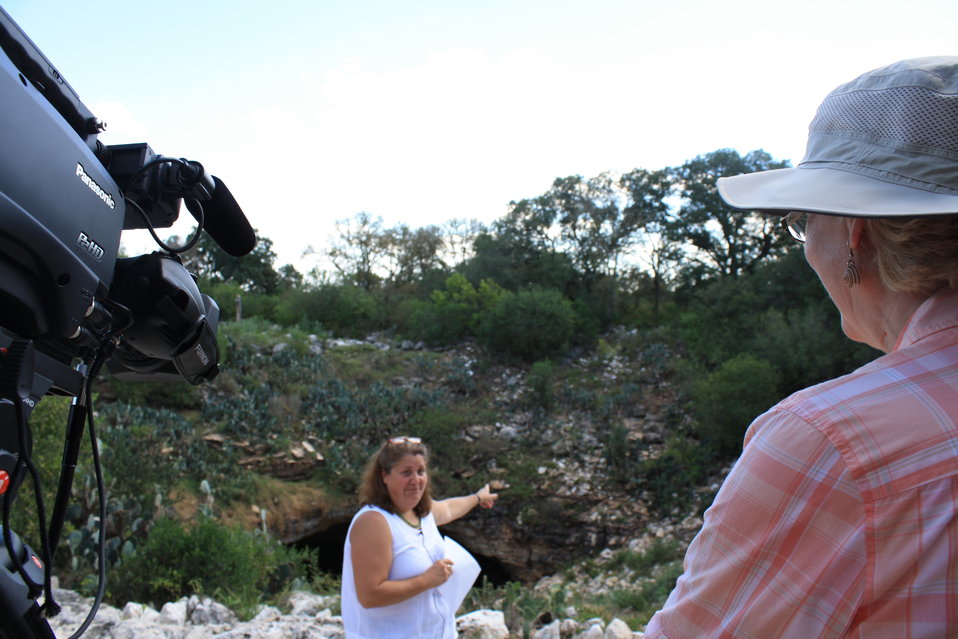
'Dress rehearsal' and equipment check